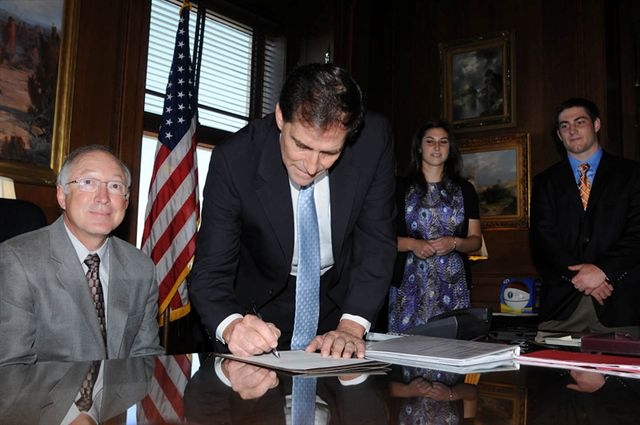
Dan Ashe Confirmed as 16th Director of U.S. Fish and Wildlife Service

New director, Dan Ashe signs official documents.
credit: (Photo: Tami Heilemann/USFWS)

Dan Ashe was sworn in as Director of the U.S. Fish and Wildlife Service in July, 2011.